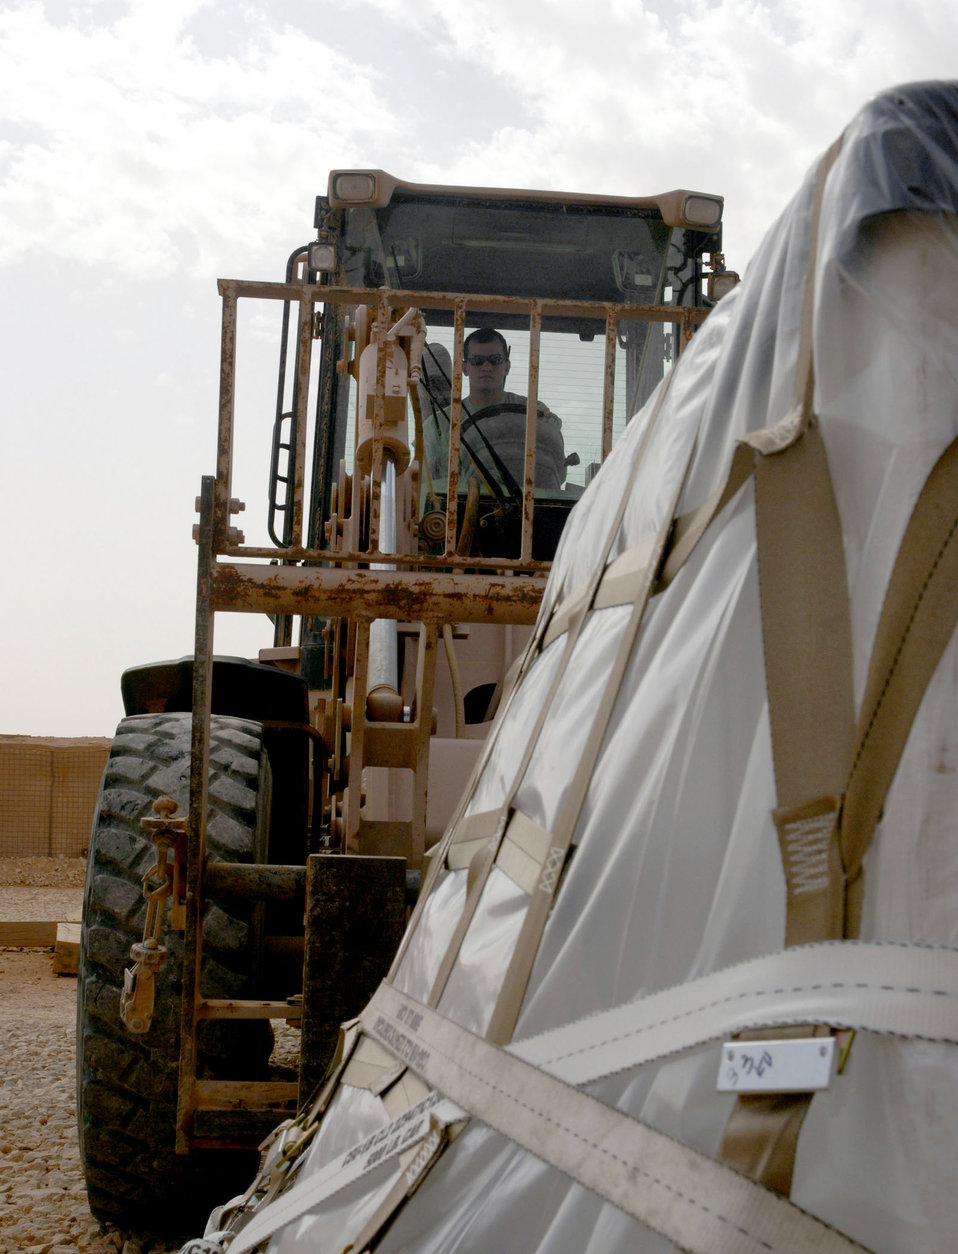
Aerial porters unload cargo for all of Iraq

Airman 1st Class James Simpson operates a forklift to move a cargo pallet April 20, 2011, at Al Asad Air Base, Iraq. The flight recently took on a commercial cargo mission and made history by unloading its first Boeing 747 in April. Airman Simpson is an aerial porter assigned to the 532nd Expeditionary Operations Support Squadron Air Mobility Flight.